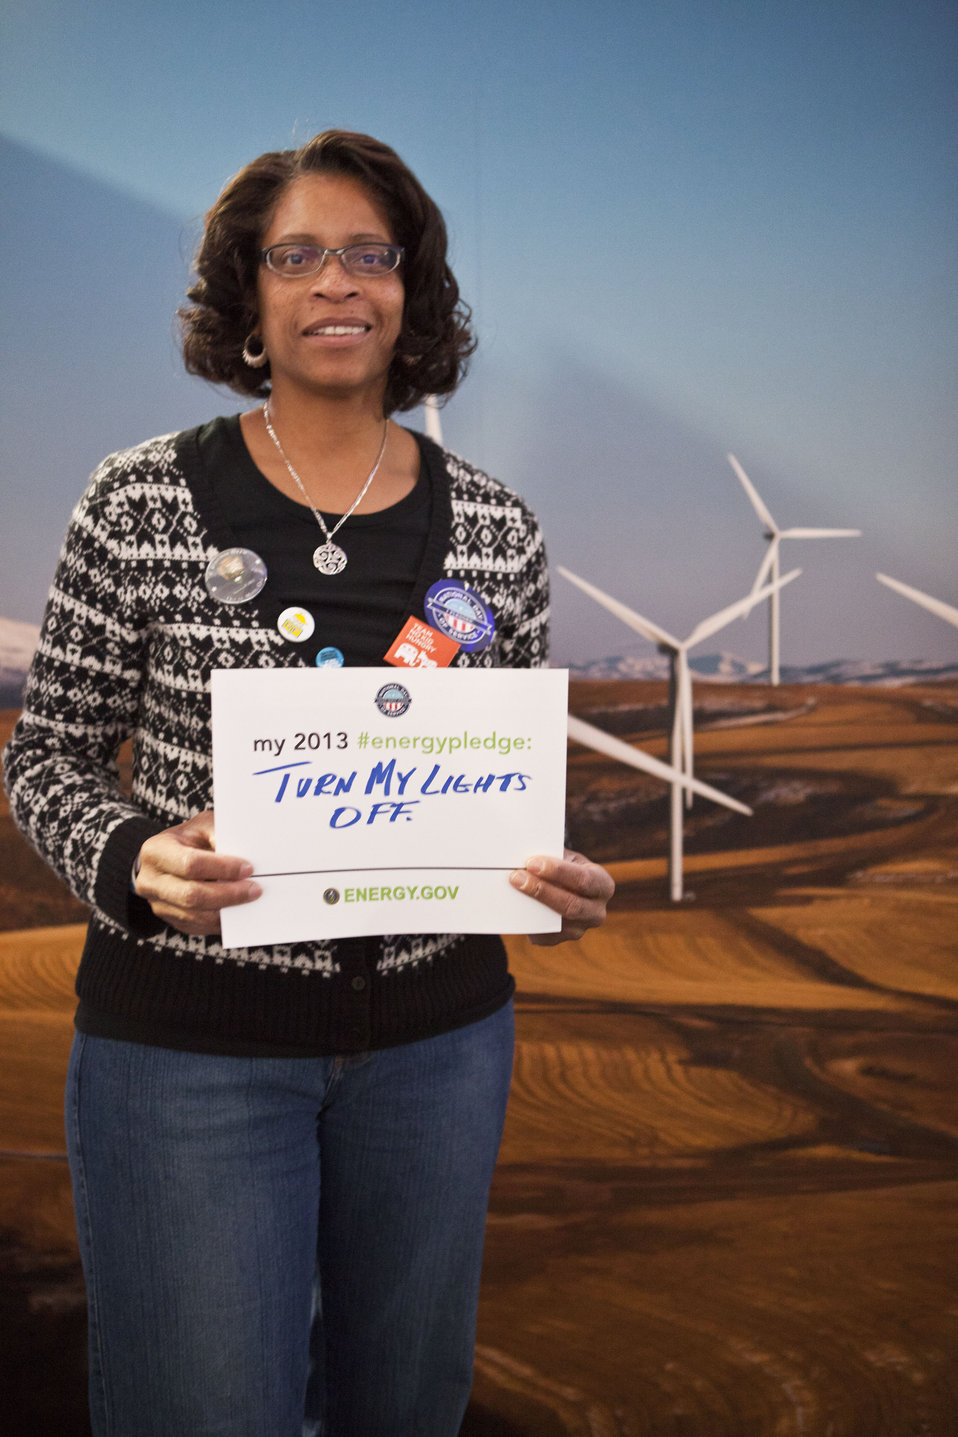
What's your #energypledge?